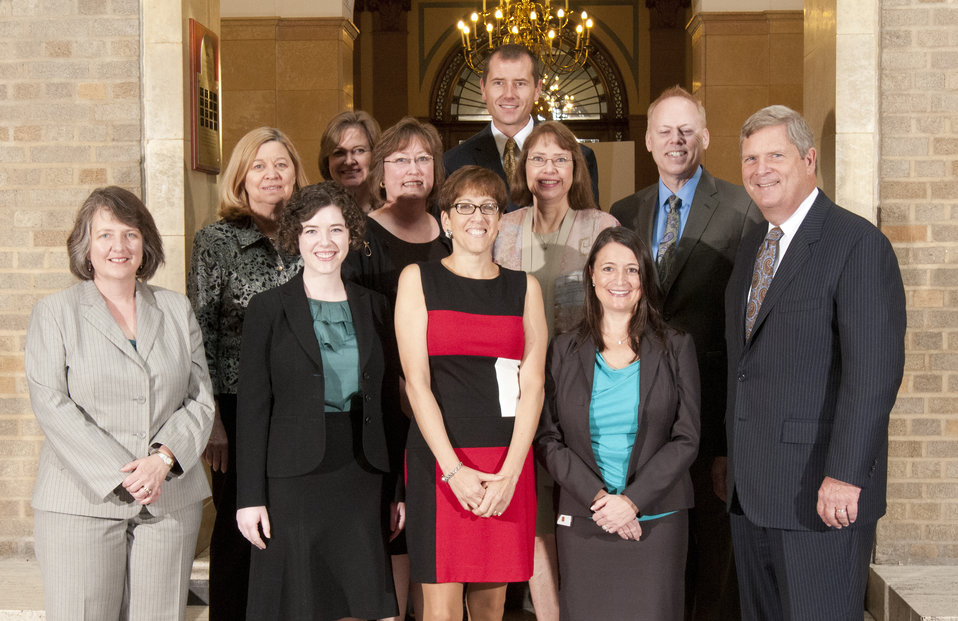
Agriculture Secretary Tom Vilsack and Deputy Agriculture Secretary Kathleen Merrigan with Honor Award Group SuperTracker e-Tool Team, Center for Nutrition Policy and Promotion (CNPP) on the patio of the U.S. Department of Agriculture in Washington, D.C. on Wednesday, Sept. 12, 2012. The SuperTracker e-Tool Team provided exceptional teamwork and commitment to the vision, development, and implementation of the MyPlate SuperTracker interactive tool serving the American Public in applying the Dietary Guidelines for Americans.USDA photo by Bob Nichols.